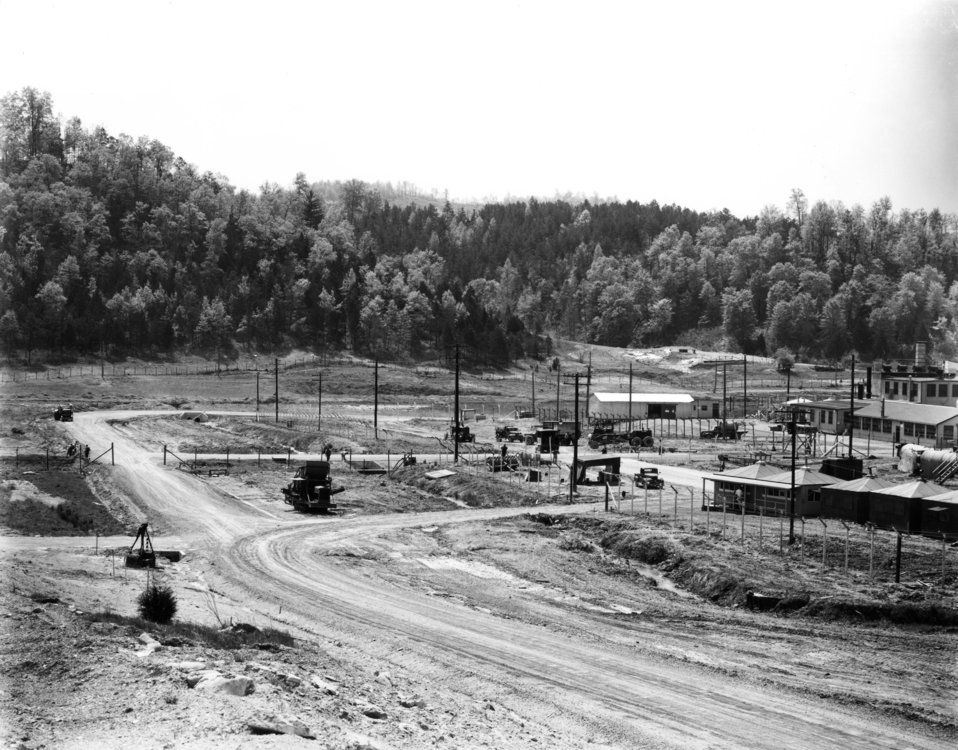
X-10 at Oak Ridge